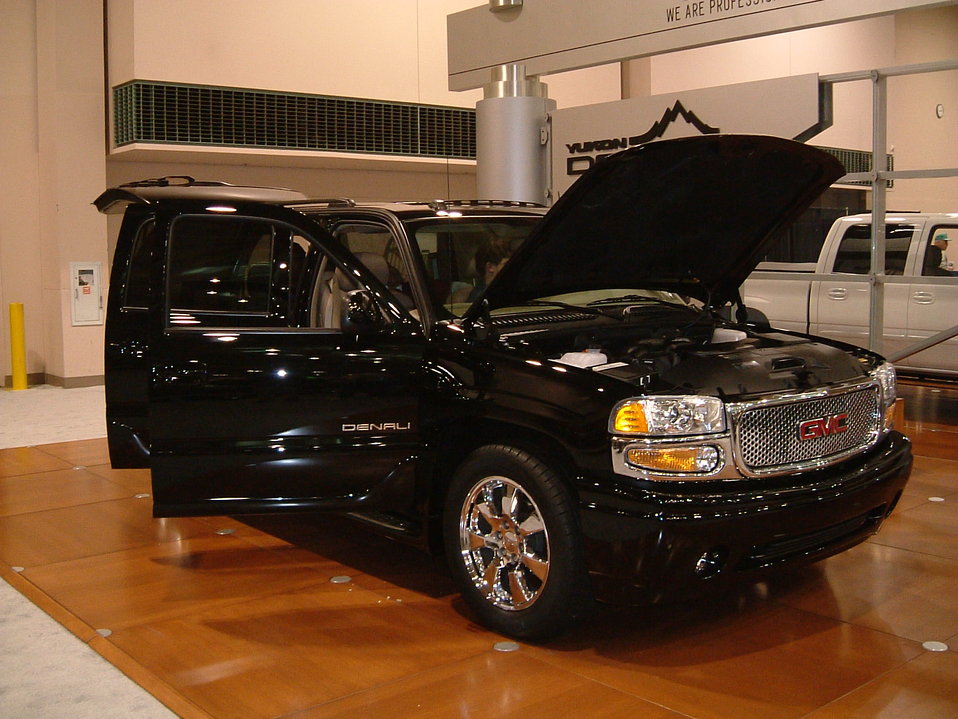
Svenska: GMC Yukon.